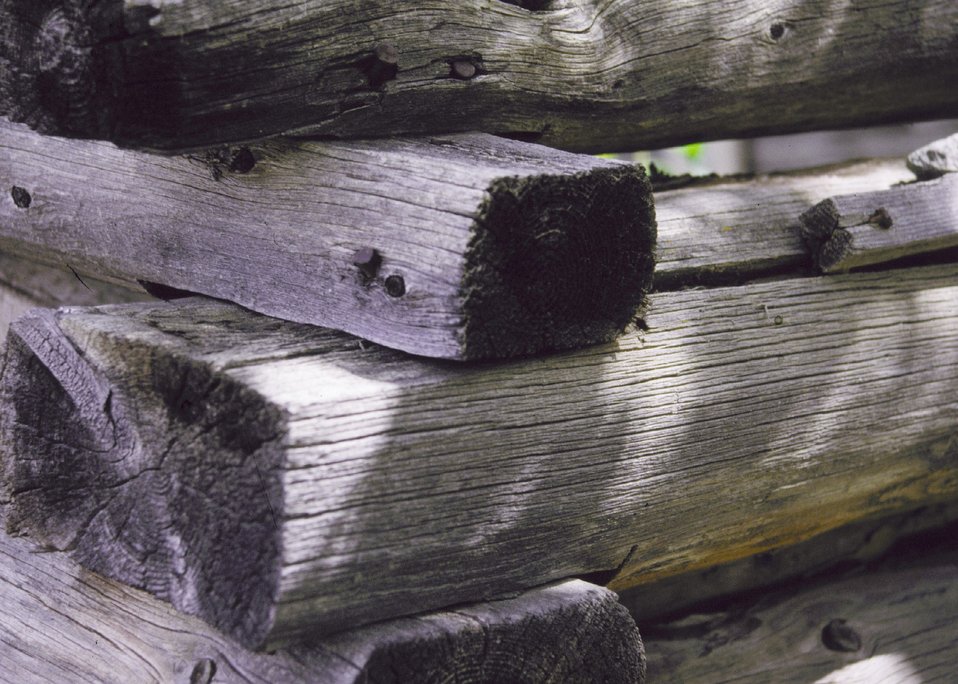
A closeup picture of a structure located at Miner's Delight, South Pass, Wyoming.